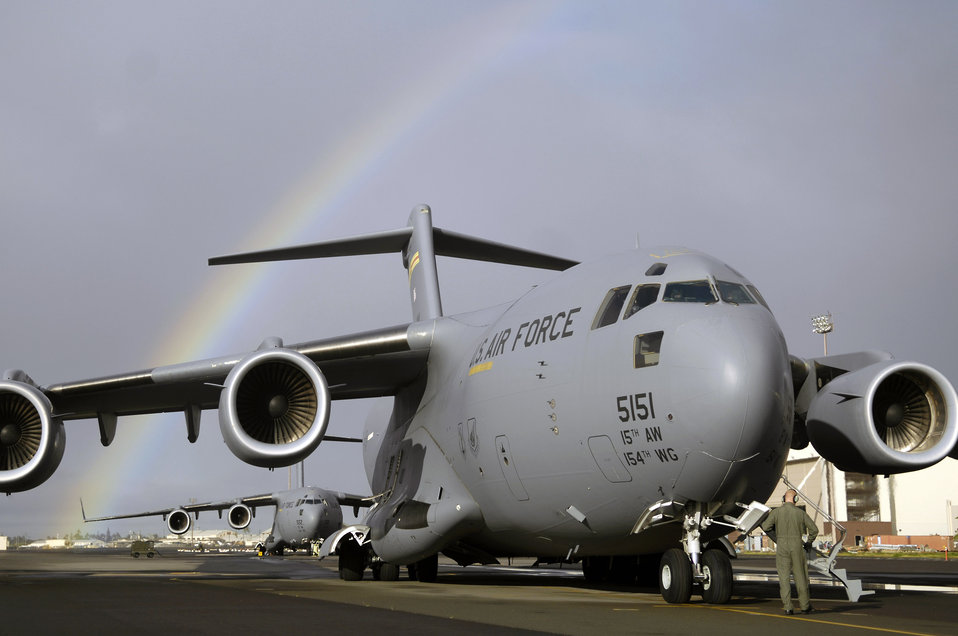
How low can they go

Staff Sgt. John Eller conducts pre-flights check on his C-17 Globemaster III Jan. 3 prior to taking off from Hickam Air Force Base, Hawaii, for a local area training mission. Sgt. Eller is a loadmaster from the 535th Airlift Squadron.